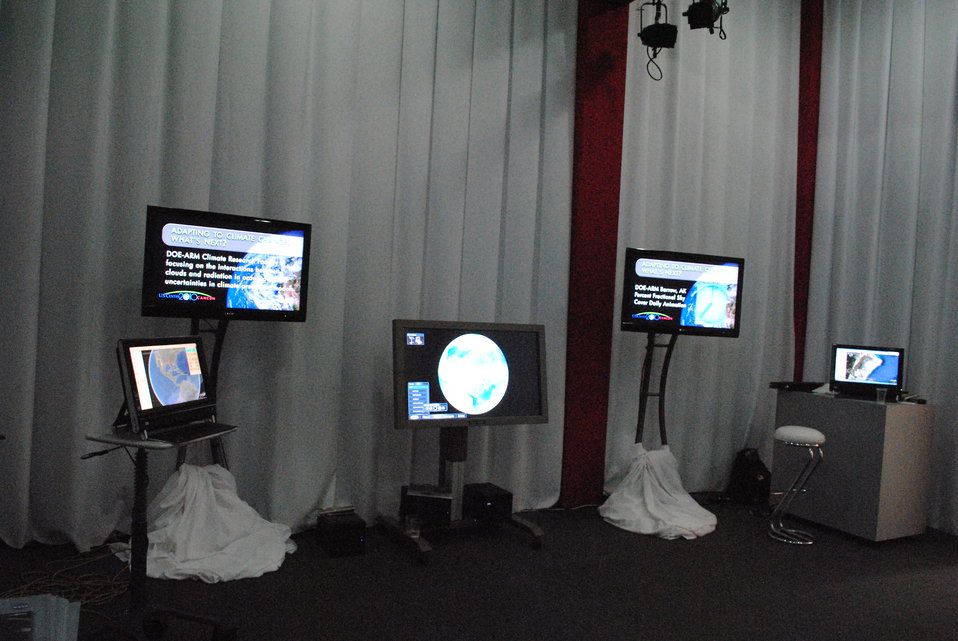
The Envirocast Vision Touch Table is on display in the Living Room at the U.S. Center at COP-16 in Cancun, Mexico, on November 30, 2010.